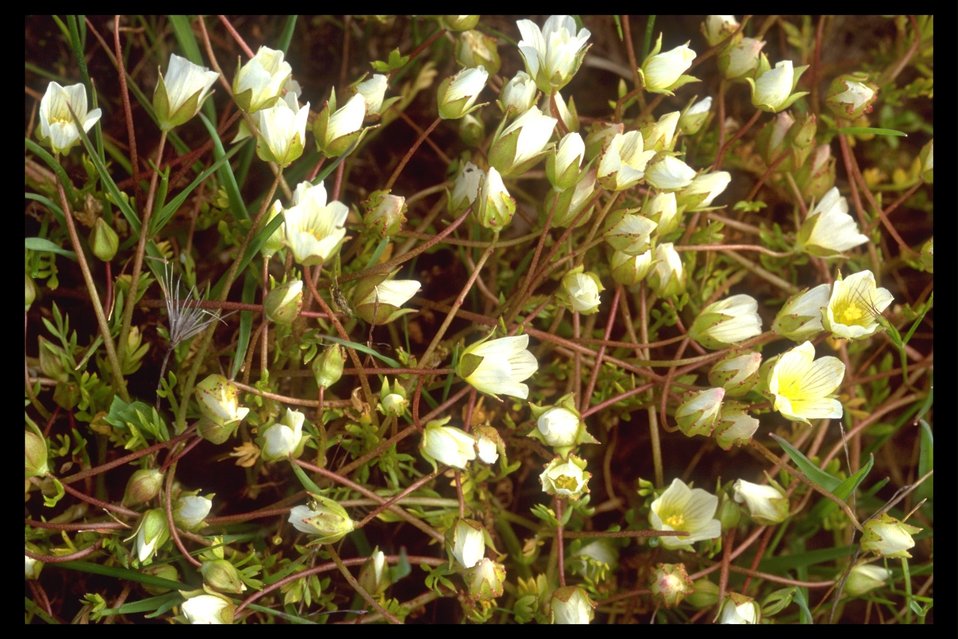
Dwarf Wooly Meadowfoam (Limnanthes floccossa ssp. pumila) found at the Upper Table Rock. note: this species only grows on the Table Rocks!